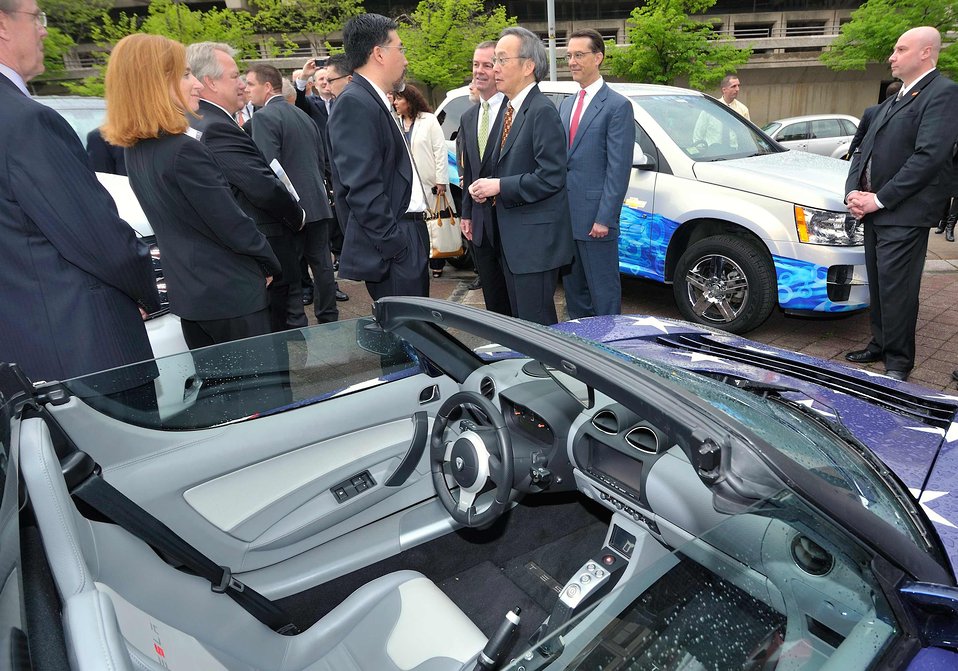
Electric Vehicles on Parade 2 of 5

Steven Chu, US Secretary of Energy, discusses electric vehicles with Brian Wynne, President of the Electric Drive Transportation Association President.